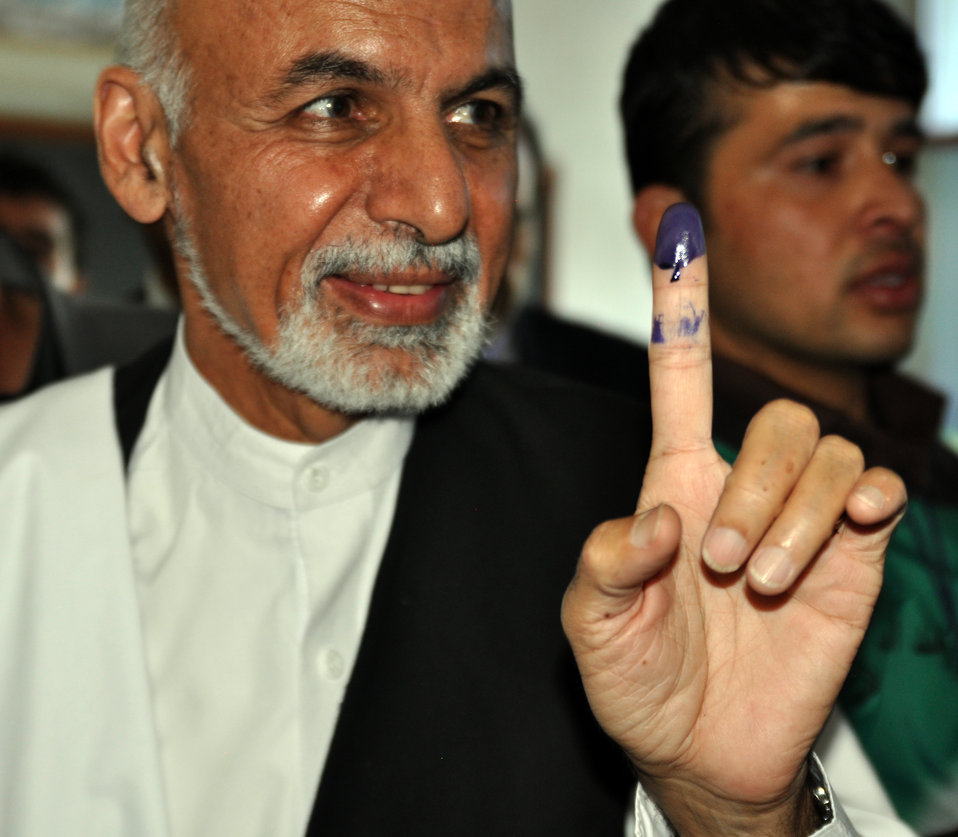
Dr. Ashraf Ghani Ahmadzai, presidential candidate, displays an inked finger after casting his vote in Kabul shows his inked finger.